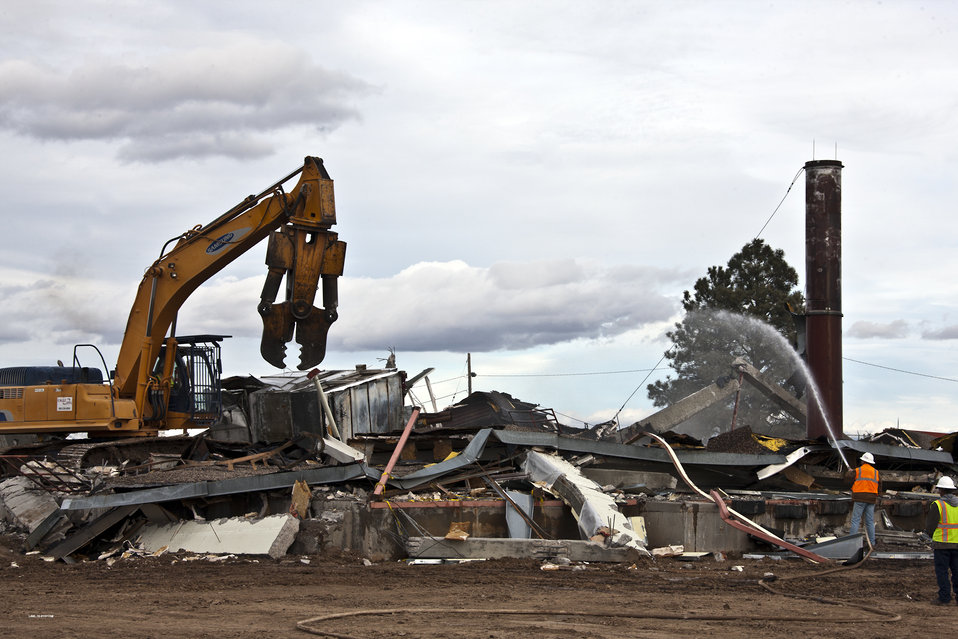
Recovery Act Workers Demolish Last of 24 Buildings and Structures at Los Alamos TA-21

Workers on Dec. 21, 2010 demolished the last and largest of 24 buildings and structures at Los Alamos National Laboratory’s Technical Area 21 slated for removal with Recovery Act funding.

Due to their age and the purposes they served, many of the buildings and structures at TA-21 were contaminated with asbestos and other chemicals and radioactive materials such as tritium, plutonium and americium. Demolition was not as easy as merely swinging a hammer or a wrecking ball and required thorough preparation and careful decontamination.